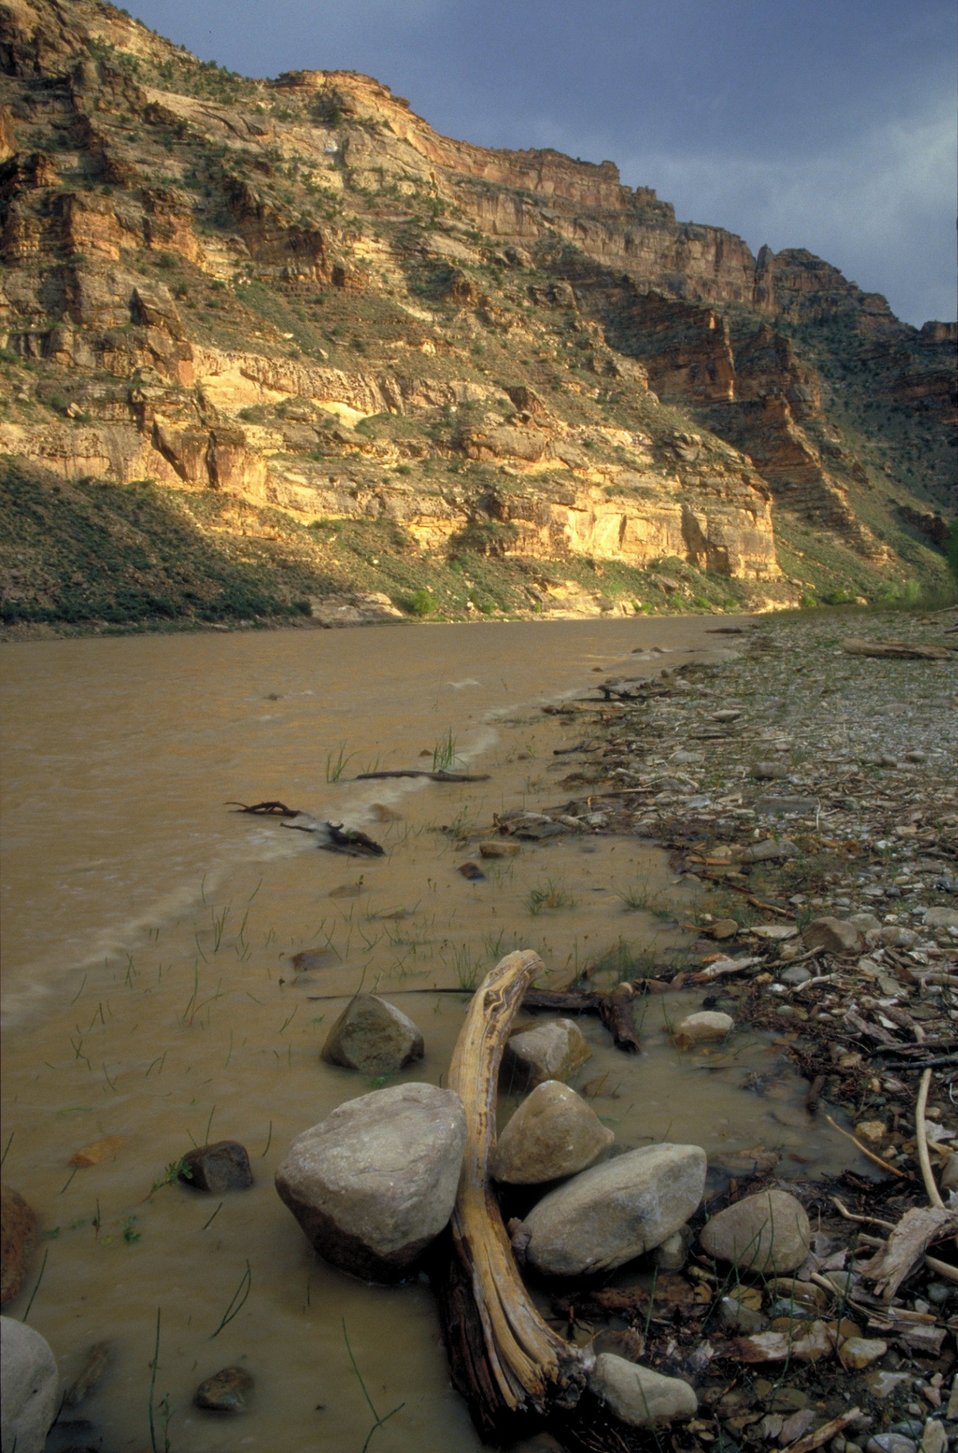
Desolation/Gray Canyons near Price, Utah.